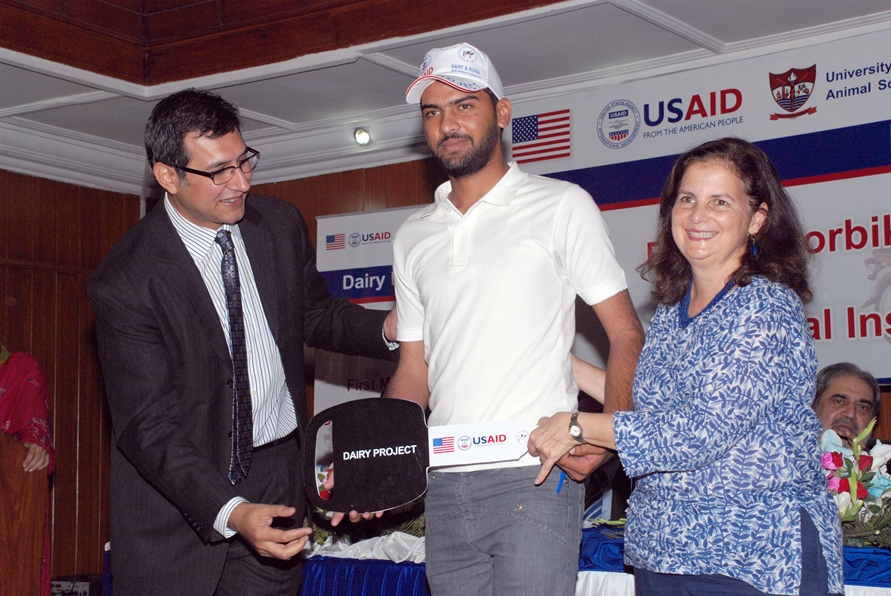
U.S. Consul General Nina Fite presenting motorcycle keys to a successfull AI technician